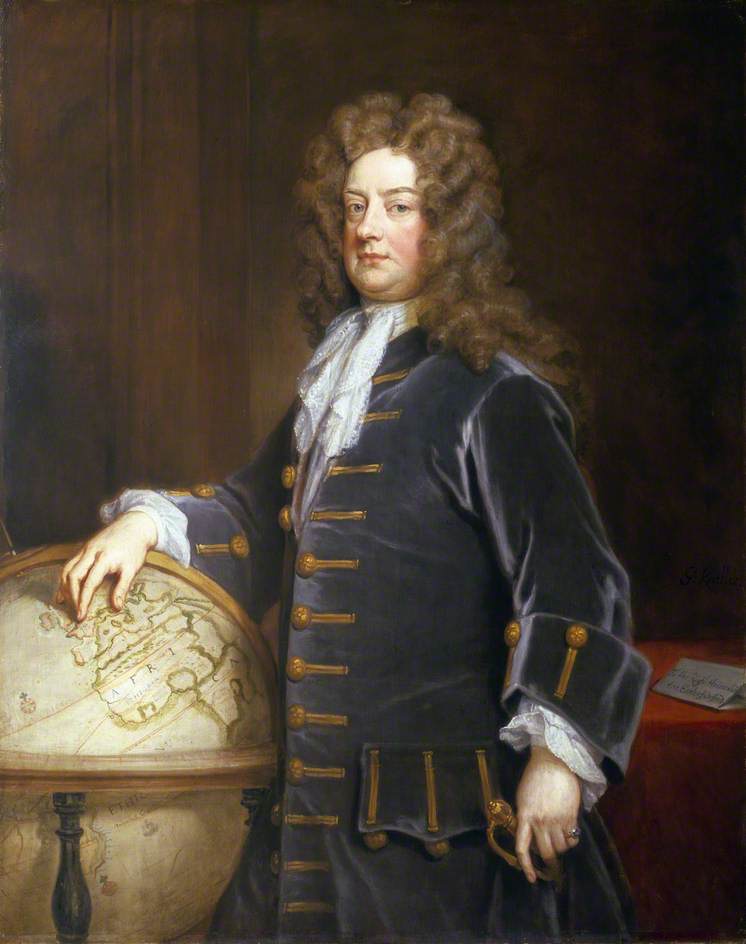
Admiral Edward Russell (1652–1727), 1st Earl of Orford by Godfrey Kneller